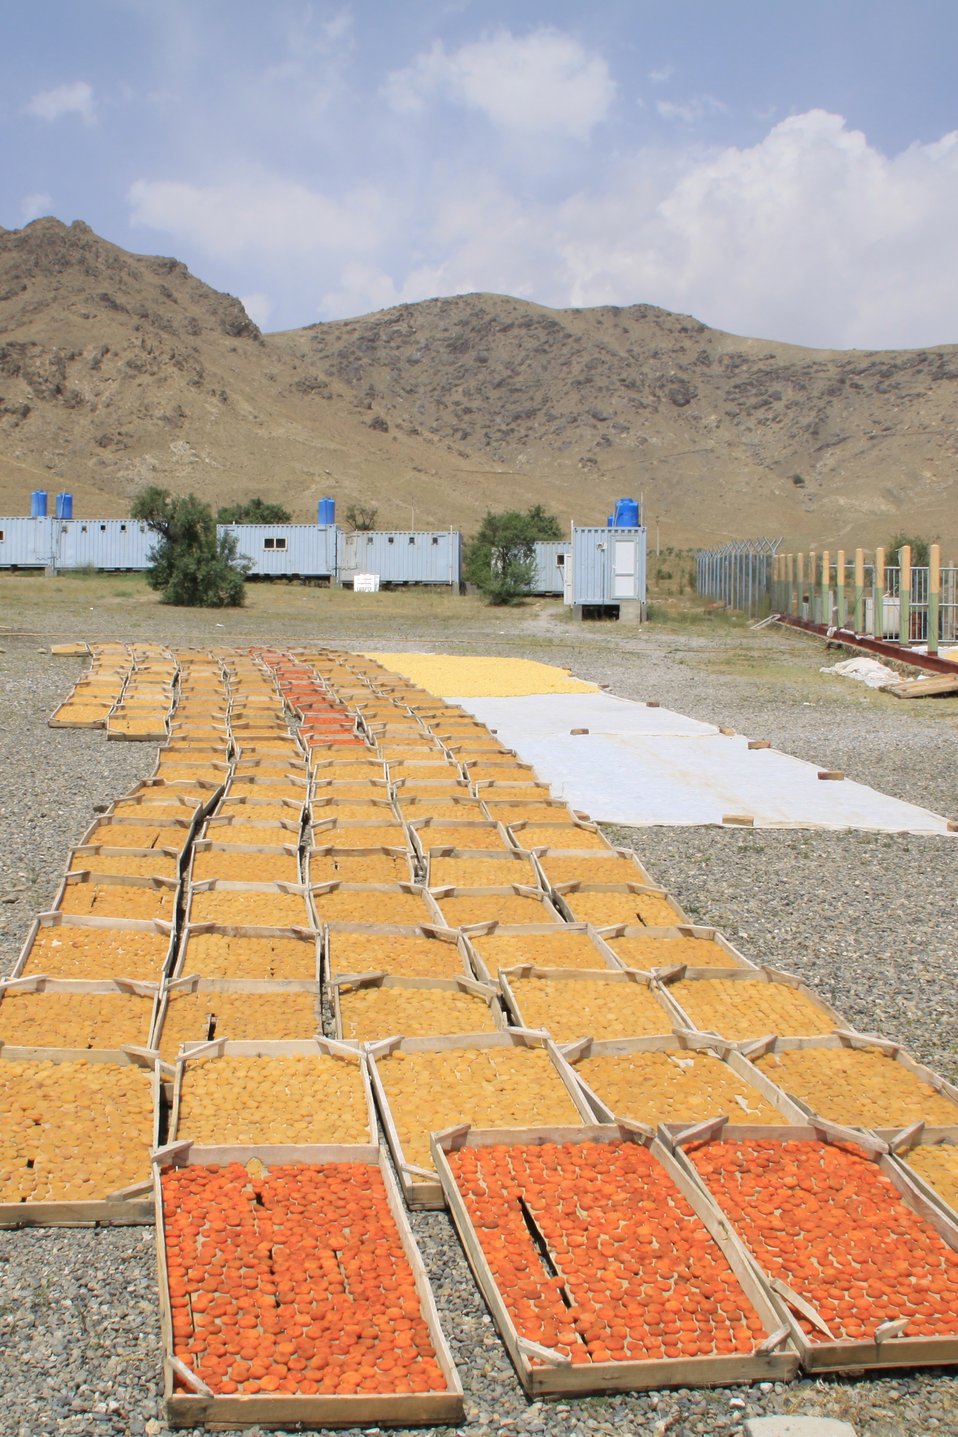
Badam Bagh Farm